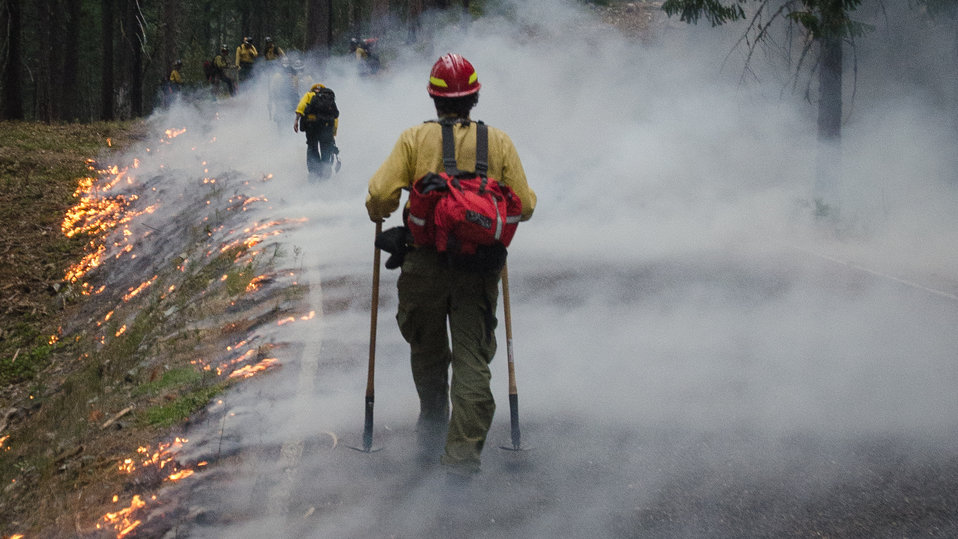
Geronimo Interagency Hotshot Crew, Department of the Interior (DOI) Indian Affairs (IA) Bureau of Indian Affairs (BIA) San Carlos Agency in Arizona; on assignment at the Big Windy Complex Wildlands Fire, approximately 15 miles west of Interstate-5 and East Northeast of Galice, Oregon, conducts a prescribed burn 'burnout' operation to help stop the main fire that may head toward this roadway, on Friday, Aug 9, 2013. The primary mission of the Interagency Hotshot Crews (IHC) is to provide a safe, organized, mobile and highly skilled hand crew for all phases of wildland fire suppression. The arduous duties and specialized assignments required of IHC personnel require uniform staffing, certification, training, equipment, communications, transportation, organization, and qualifications that adhere to interagency standards and guidelines.